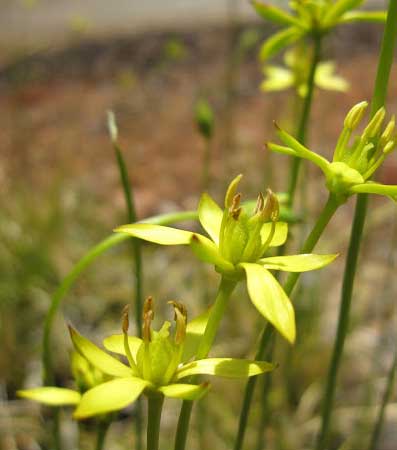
Harpers

Harper’s beauty is a perennial lily with a solitary yellow flower and iris-like leaves and is listed as federally endangered.